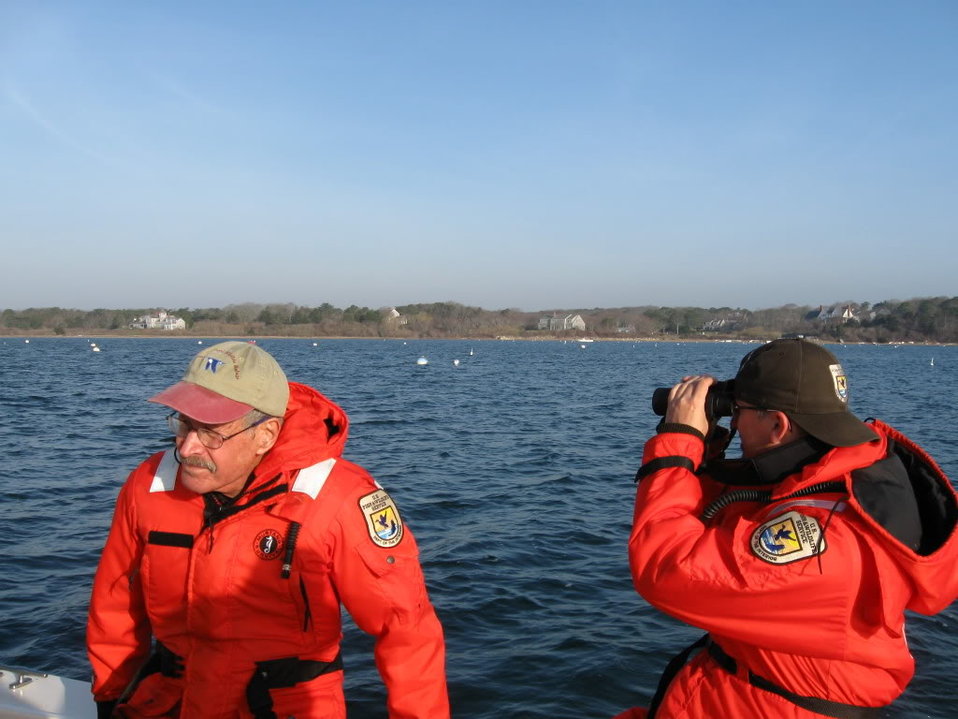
Service employees at Monomoy National Wildlife Refuge

U.S. Fish and Wildlife Service employees at Monomoy National Wildlife Refuge.

Credit: Zachary Cava/USFWS

Monomoy National Wildlife Refuge is part of the Eastern Massachusetts National Wildlife Refuge Complex.